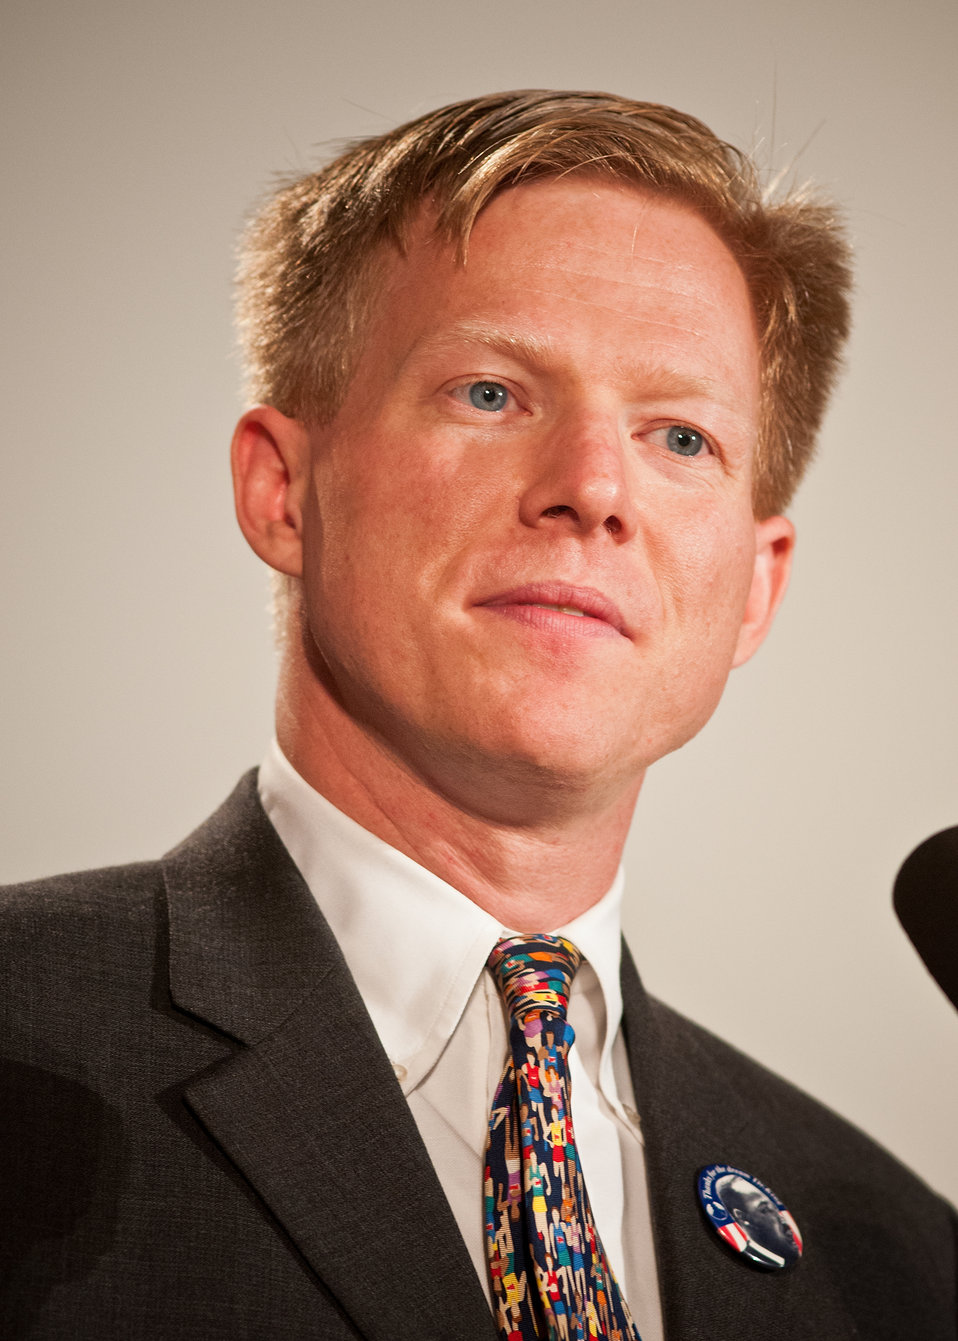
Max Finberg, Director, Faith Based and Neighborhood Partnerships, Master of Ceremonies and opening speaker welcomes employees and visitors to the National Service Day and Martin Luther King Celebration in honor of Dr. Martin Luther King Jr.’s contributions to the Civil Rights Movement at the United States Department of Agriculture in Washington, D.C., Thursday, January 12, 2012. Finberg spoke of Dr. King’s life and gave to this country through his labor of love and acceptance and through those lessons how we can improve our own lives and the lives of others.